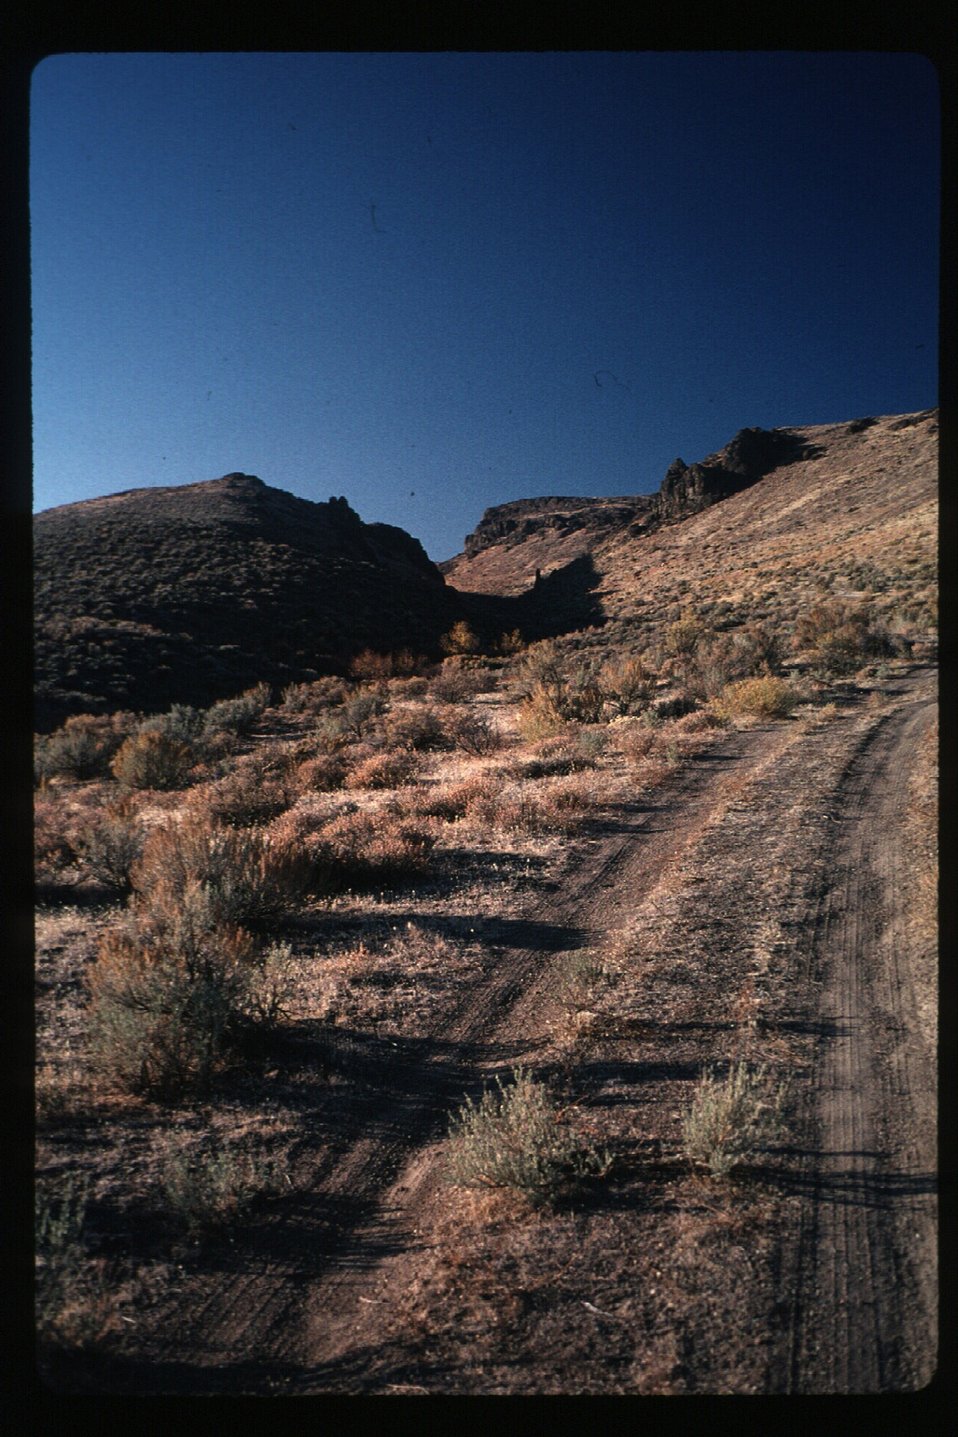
Wild Horse and Burro Adoption Program Road Four Rivers Field Office LSRD Lower Snake River District